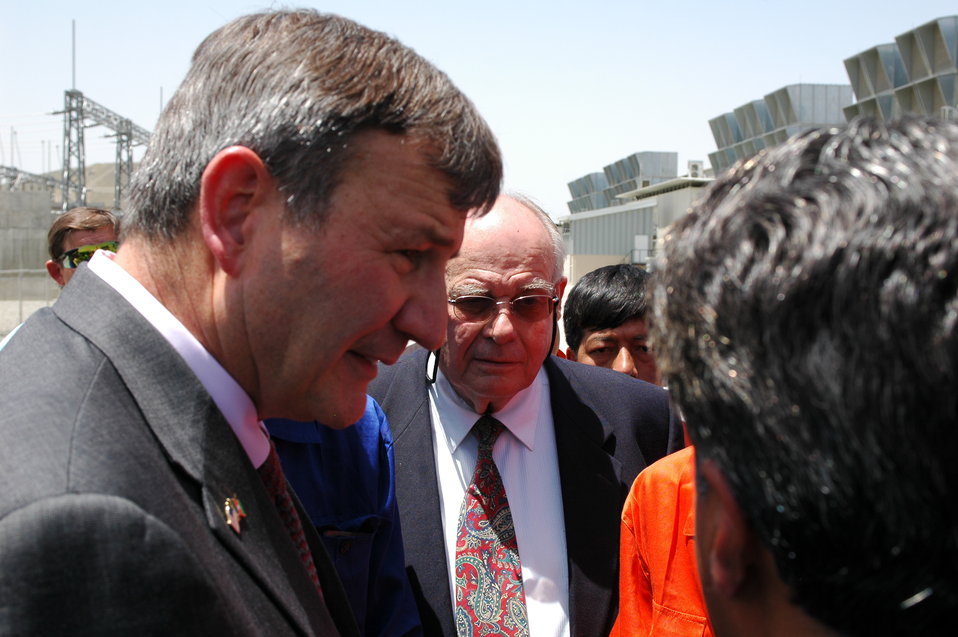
105 MW Tarakhil Power Plant Handover